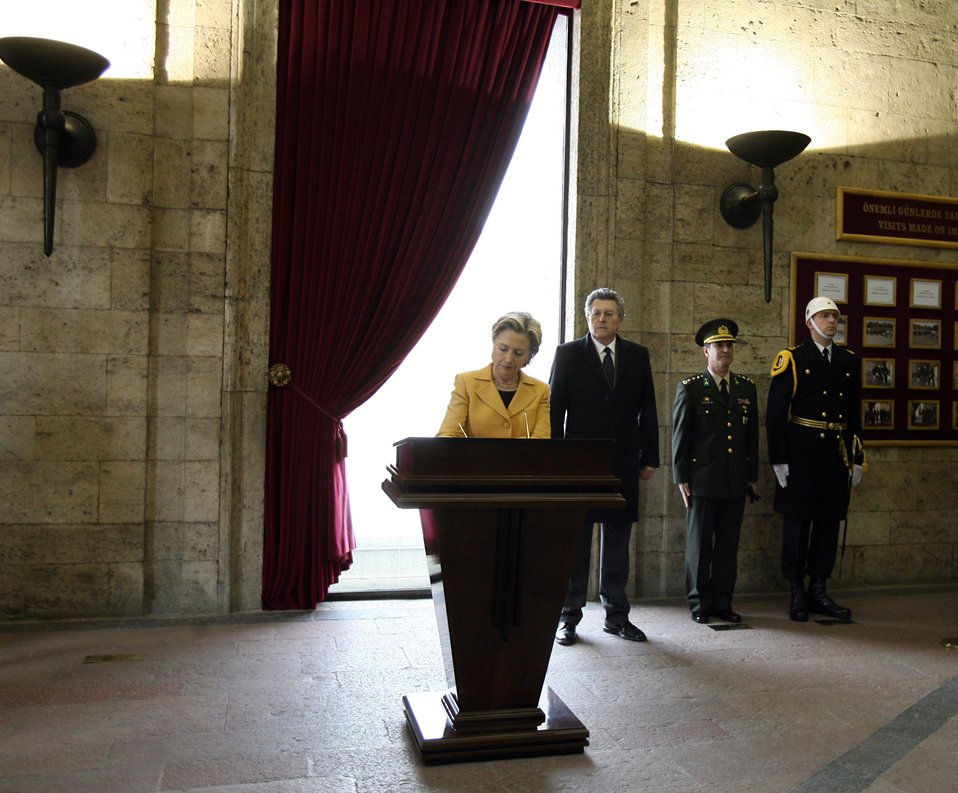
Secretary Clinton Visits Tomb of Turkish Republic’s Founder

U.S. Secretary of State Hillary Rodham Clinton signs the guest book at Anitkabir, Mustafa Kemal’s mausoleum, Ankara, Turkey March 7, 2009.